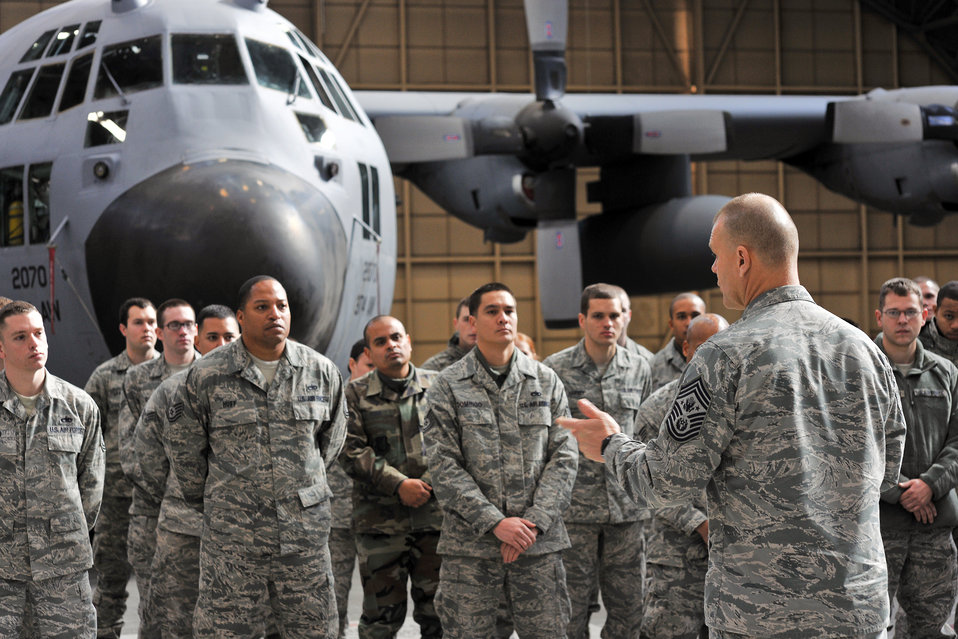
CMSAF visits Yokota Airmen

Chief Master Sgt. of the Air Force James Roy addresses Airmen from the 374th Maintenance Group, Dec. 27, 2010, at Yokota Air Force Base, Japan. Chief Roy was assigned to Yokota Air Base from August 2005 to May 2007 as the command chief master sergeant at U.S. Forces Japan and 5th Air Force.